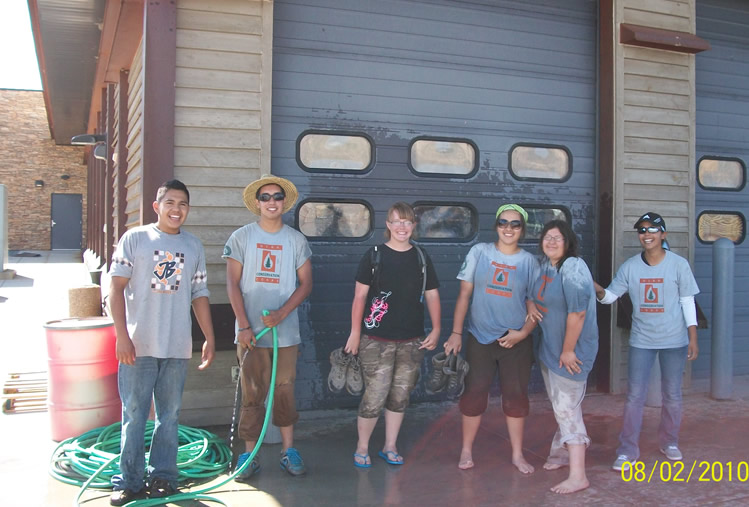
Crews cool off after working on a trail project

Youth Conservation Corps crew teamed up with the Utah Conservation Corps crew to complete a trail project to increase the current trail at the James V. Hansen visitor center by 1.2 miles. Coordinates were set early in the summer during higher water levels and the crew used a map and flagging tape to mark where the grass would need to be cut short to begin work. Clumps of bunch grasses left after mowing were tripping hazards and the crew set out to remove these hazards. This work was difficult, particularly in the hot sun, but very important to the refuge’s visitation program.